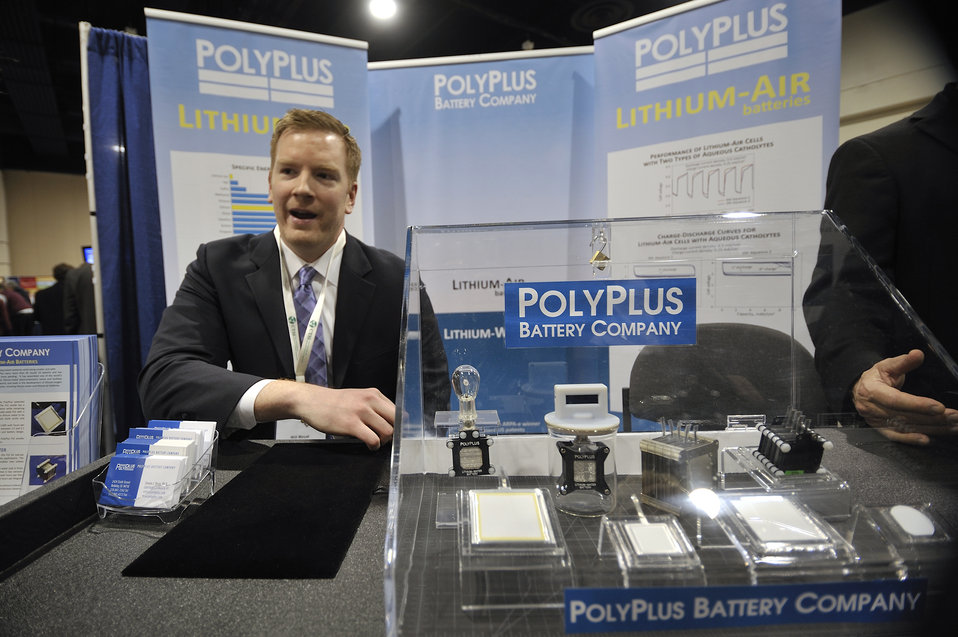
ARPA-E Energy Innovation Summit 2011, 46 of 83

Polyplus Battery Company booth at the Summit's Technology Showcase.